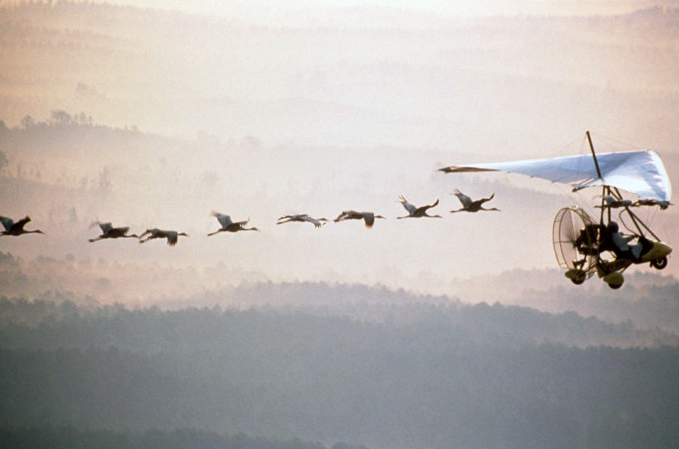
Ultralight Migration

Whooping cranes being taught their fall migration route by an ultralight aircraft piloted by a costumed human.